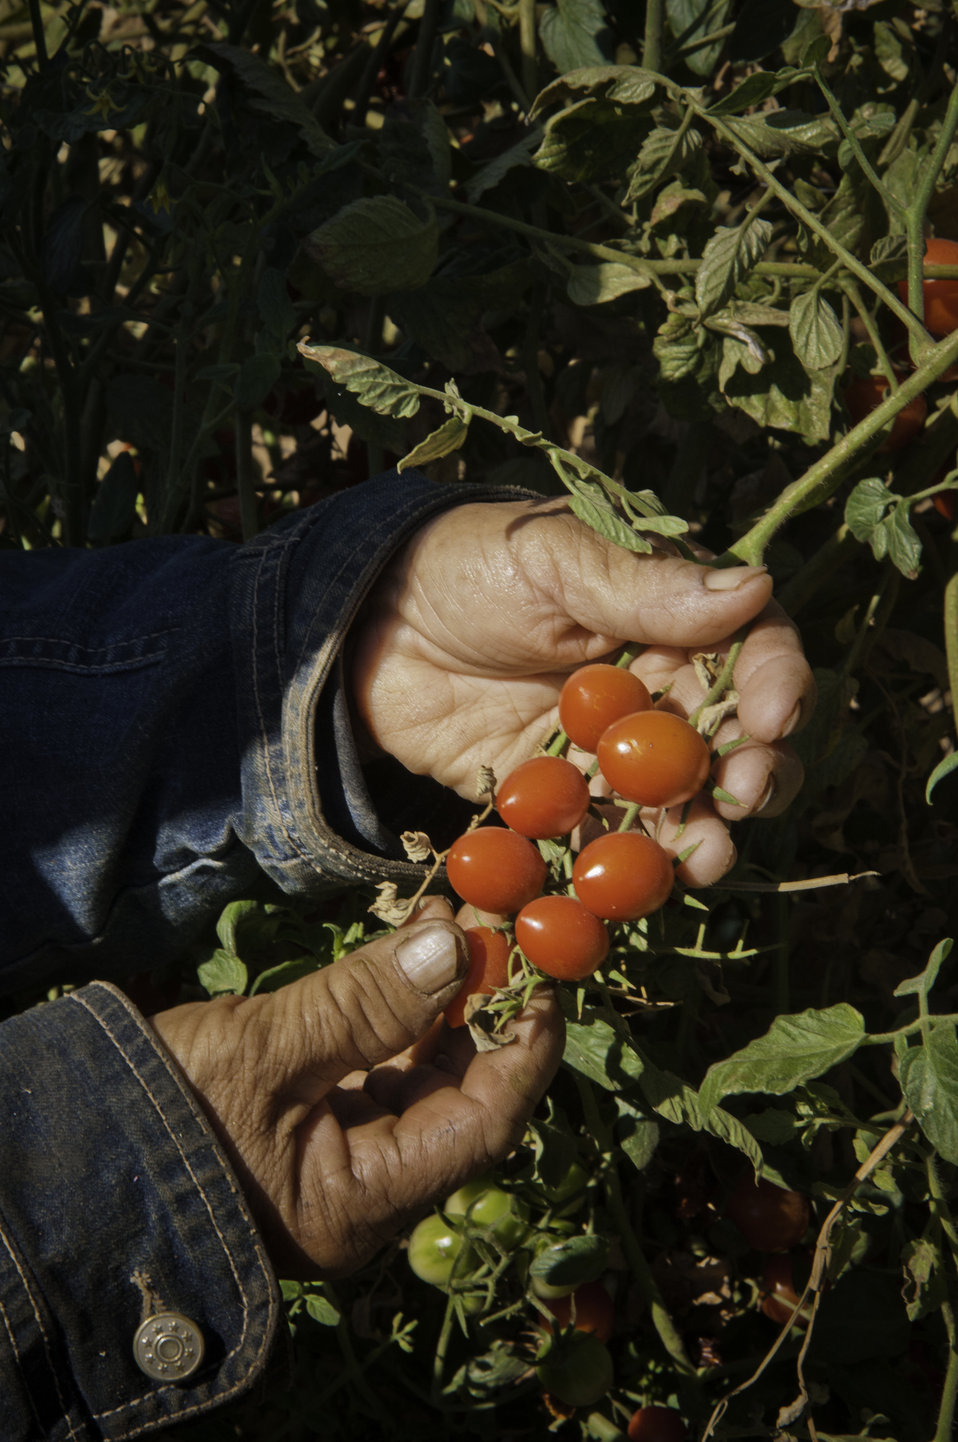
May Young Vu a Hmong farmer harvesting cherry tomatoes on her farm May's Flower's in Sanger, California May Young Vu a Moung farmer taking opo squash harvested in the morning on her farm May's Flower's in Sanger, California to be packed for the farmers market in the afternoon on Thursday, August 29, 2013.